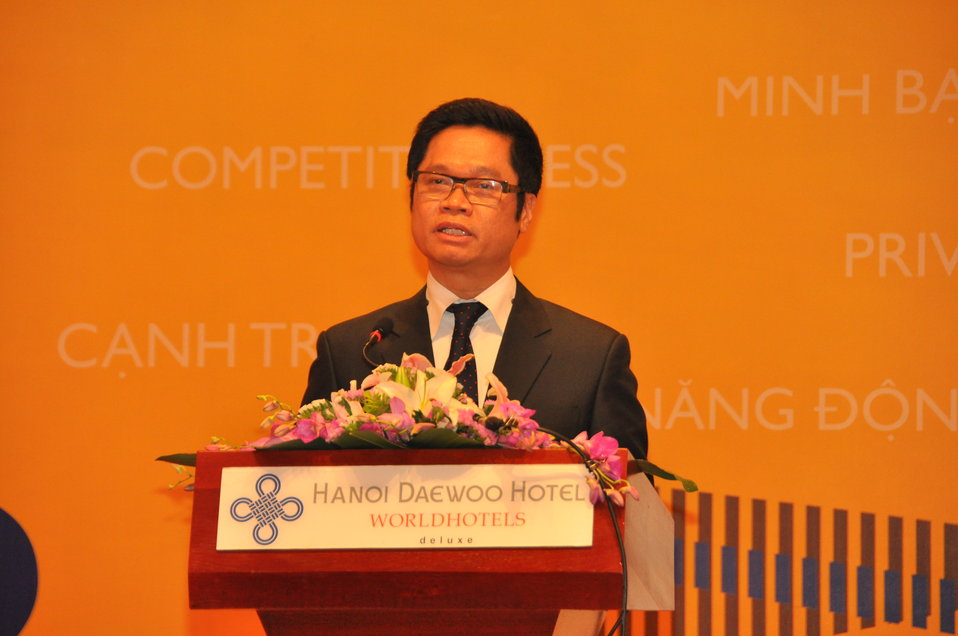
Provincial Competitiveness Index Launch, March 14, 2013

Hanoi, March 13, 2013